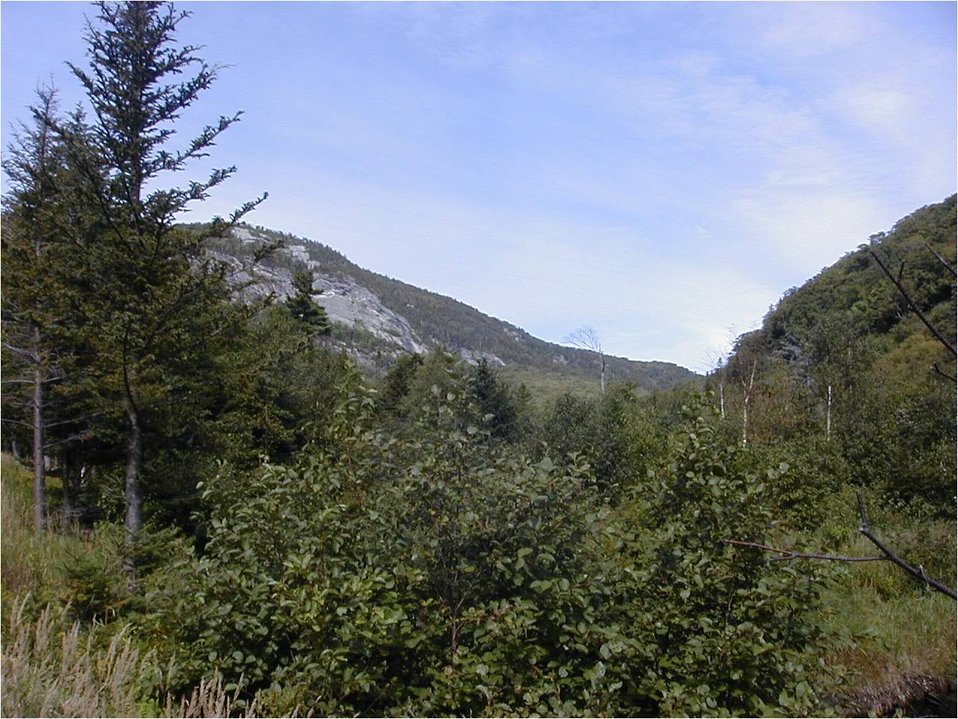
Mountain tops